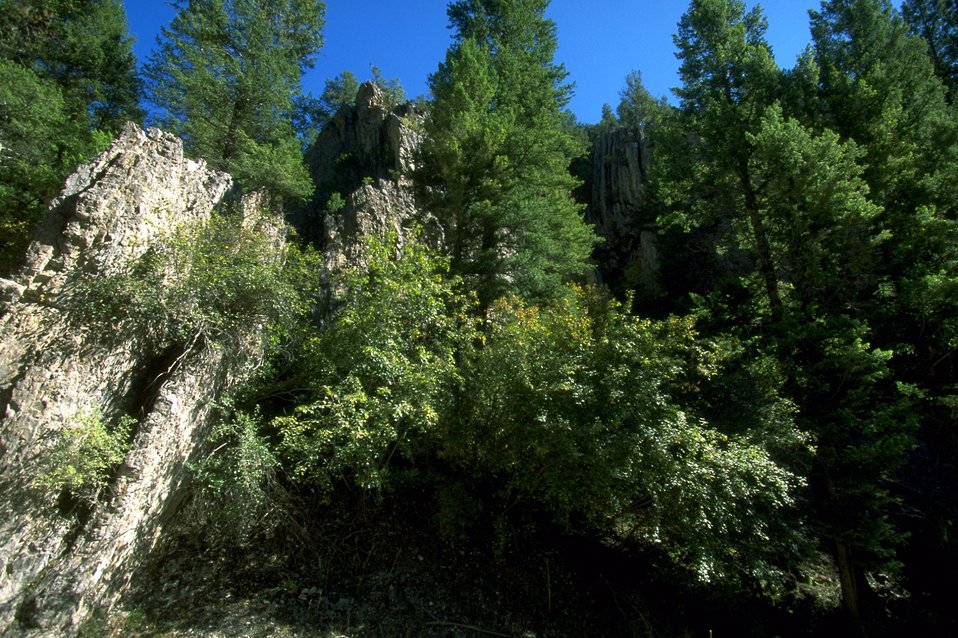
Rattler Gulch-Limestone Cliffs ACEC (area of critical environmental concern)